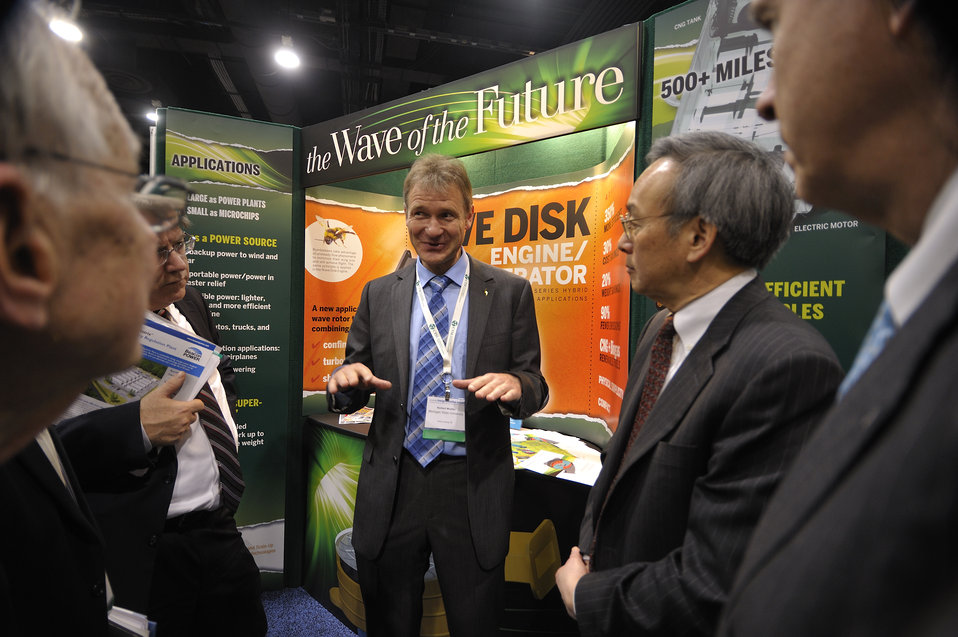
ARPA-E Energy Innovation Summit 2011, 53 of 83

Dr. Norbert Mueller from Michigan State University speaks with Steven Chu, Secretary, United States Department of Energy about the wave disk engine at the Summit's Technology Showcase.